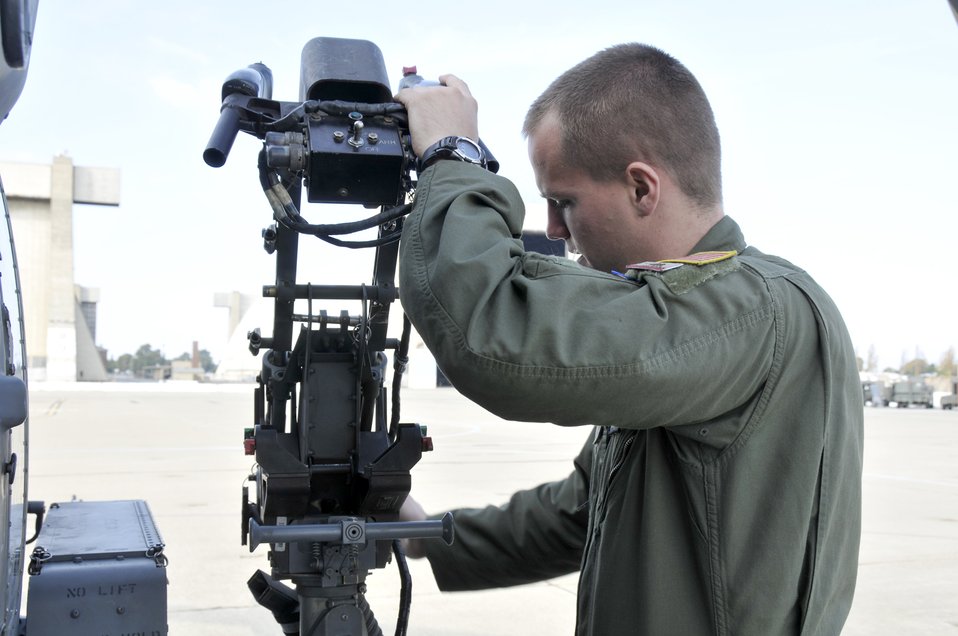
California Coast 'Guard'

At Moffett Federal Airfield, Calif., Senior Airman Jacob Ellwood conducts a preflight check on a HH-60G Pave Hawk helicopter Nov. 6, 2010. Airman Ellwood is a flight engineer assigned to the California Air National Guard's 129th Rescue Squadron.